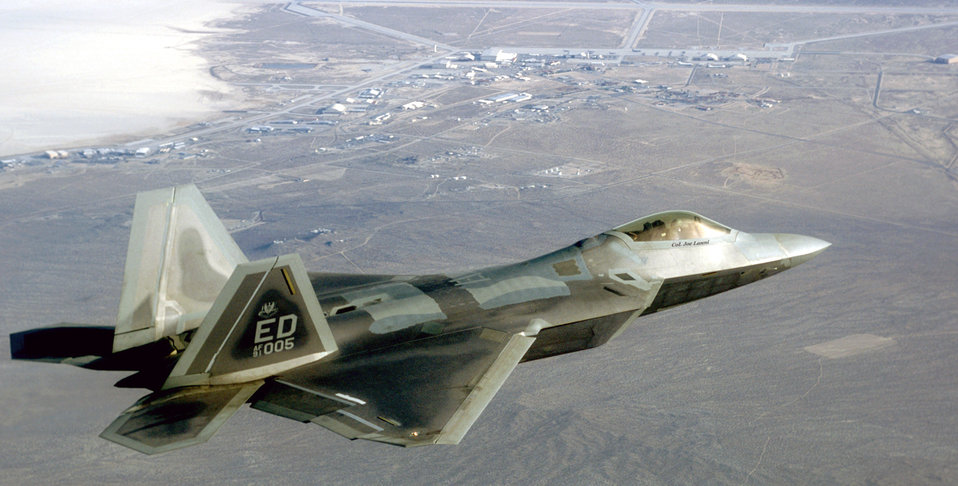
F/A-22 Raptor

FILE PHOTO -- Air dominance is the first priority of any combat commander and the F/A-22 Raptor will provide it for them, according to Lt. Gen. John D.W. Corley, the principal deputy assistant secretary of the Air Force for acquisition at the Pentagon. He testified before the House Armed Services Committee subcommittee on tactical air and land forces.